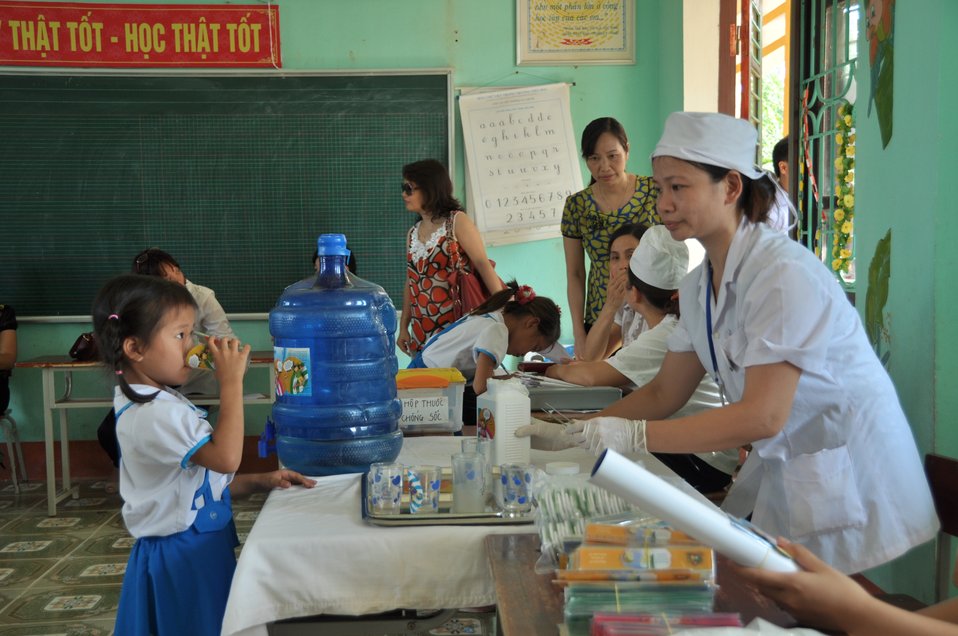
USAID supports deworming education and medication distribution in Bac Giang Province

May 20, 2013